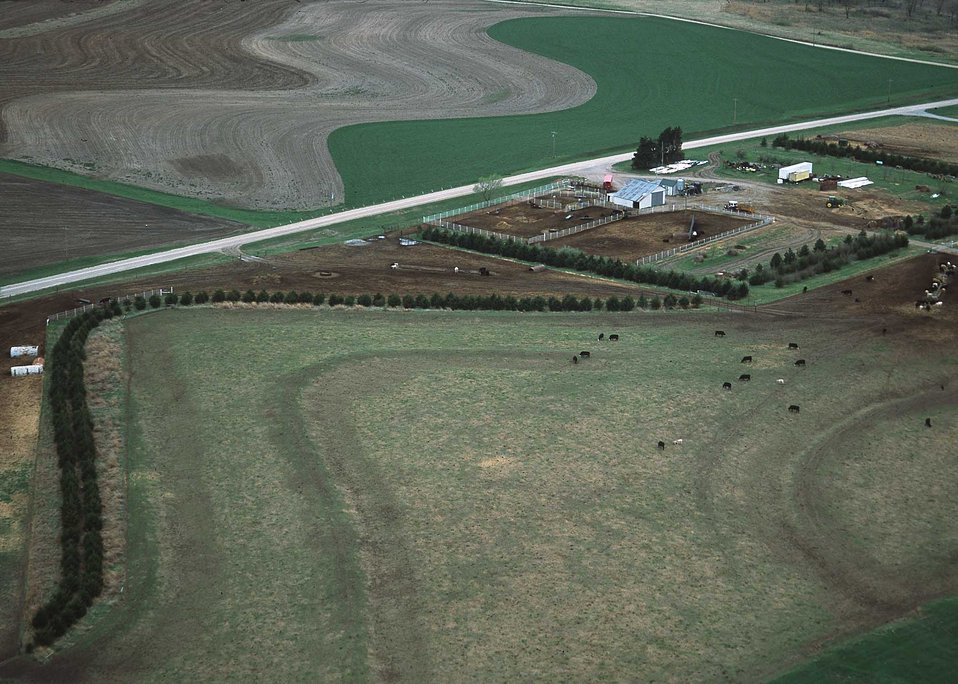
Aerial view of farmstead windbreaks. Kansas.